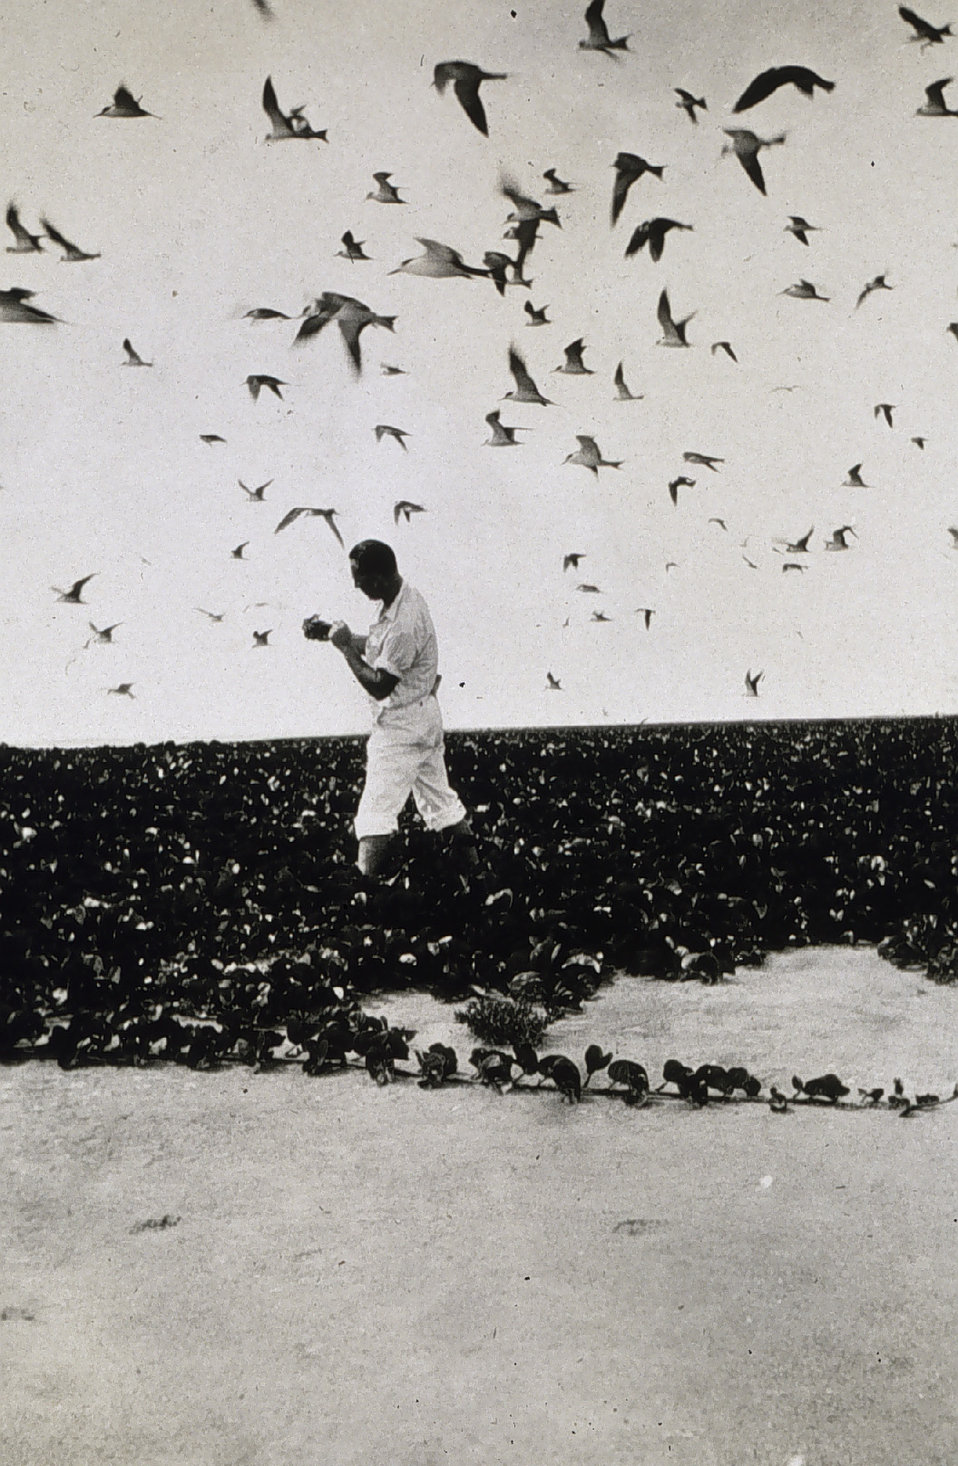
No shortage of birds.